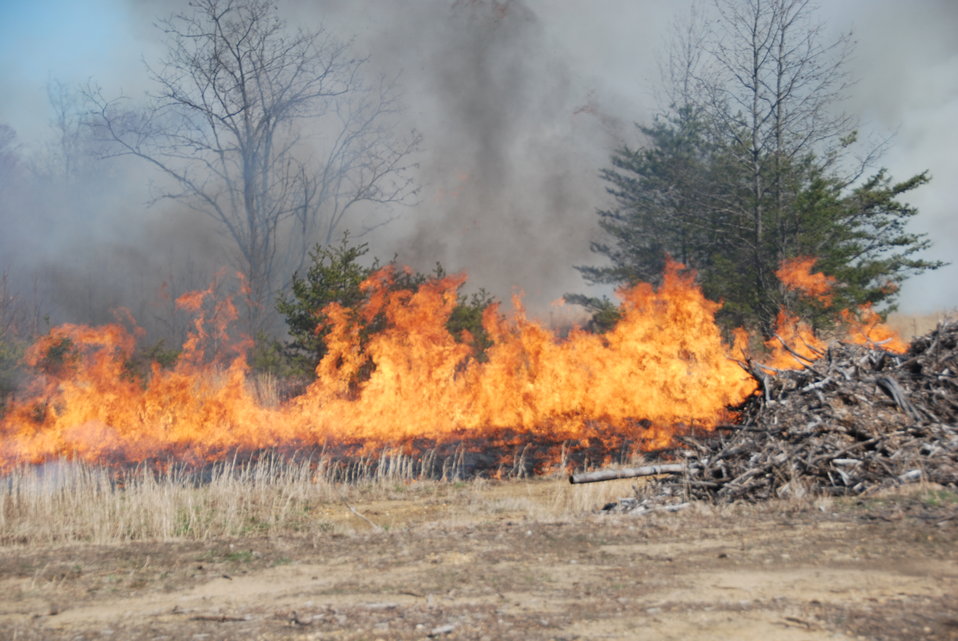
Patuxent Research Refuge Controlled Burn

Laurel, Maryland, April 14, 2012: A controlled burn at Patuxent Research Refuge maintains native grasslands, removes woody vegetation, and controls invasive species such as Korean Lespedeza.